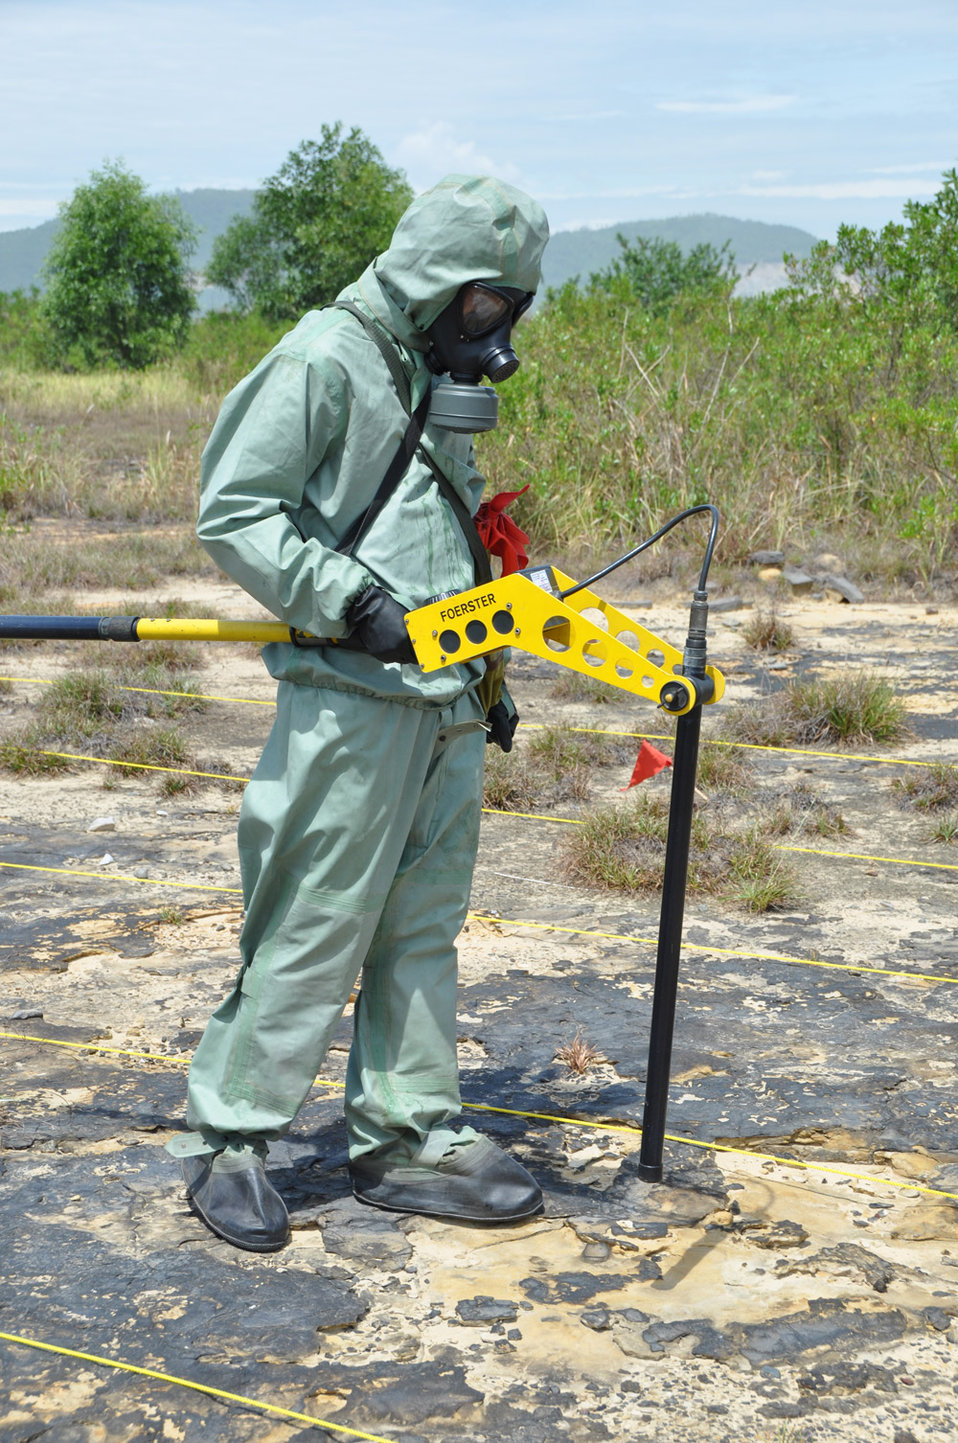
A Vietnamese soldier demonstrates UXO detection and clearance in Danang. June 17, 2011